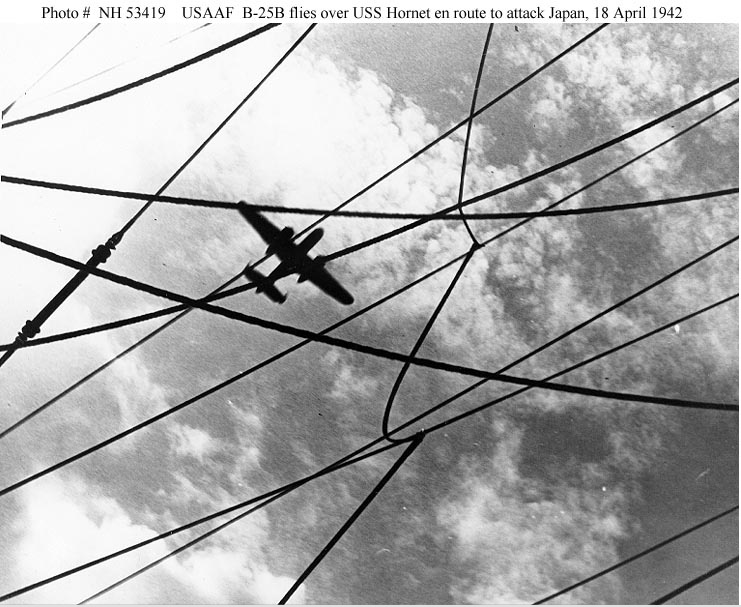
Doolittle Raid

A U.S. Army Air Forces B-25B bomber flies over USS Hornet (CV-8) while on its way to attack targets in Japan, just after it was launched on the morning of April 18, 1942.